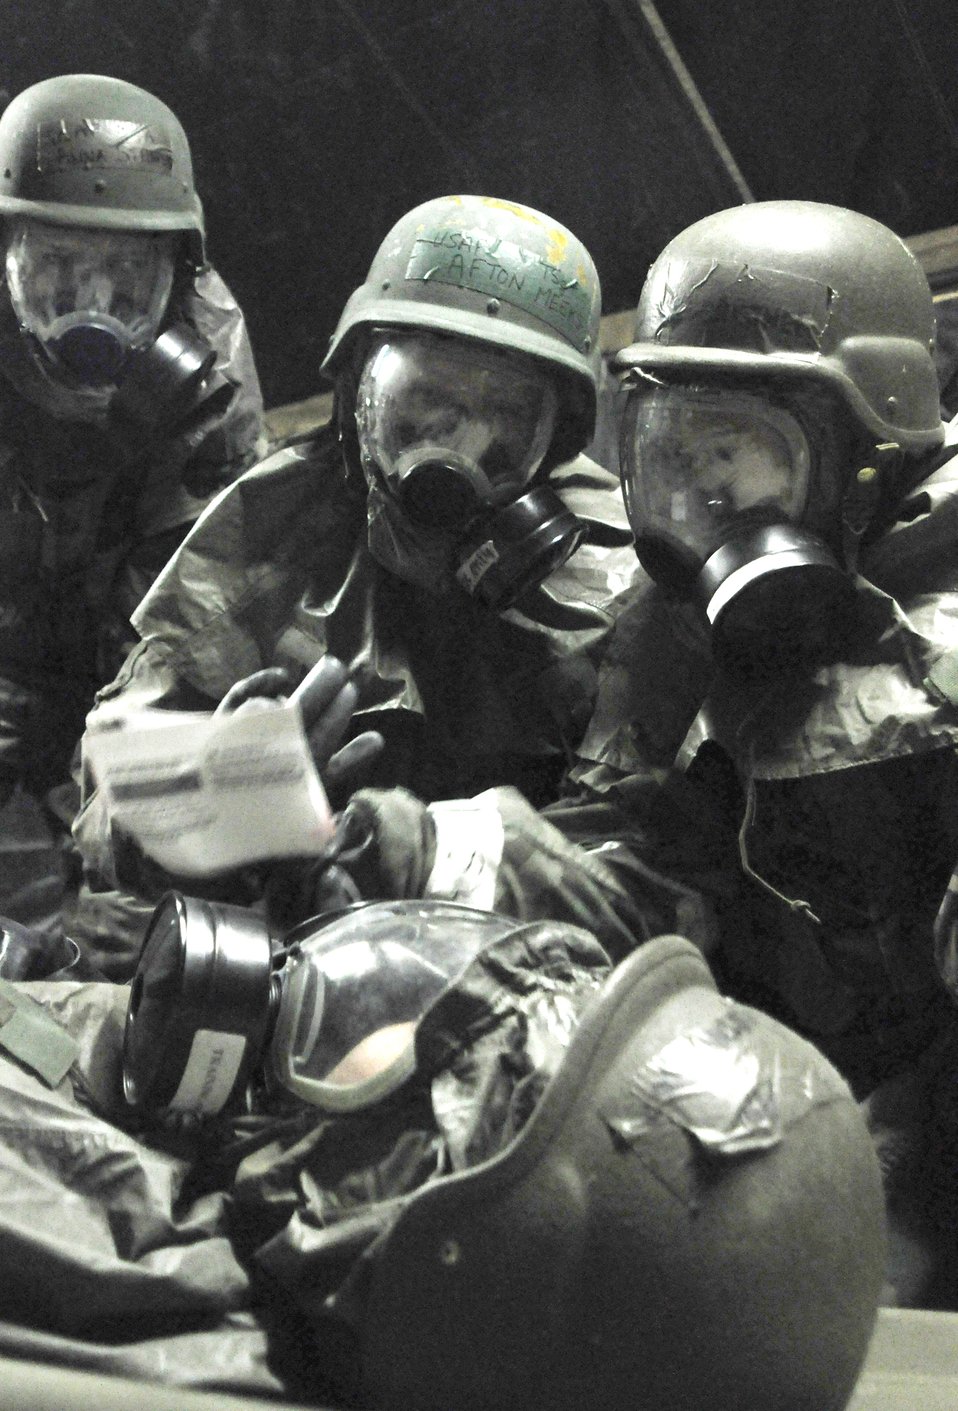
Where does it hurt?

Staff Sgt. Crystal Thompson, Tech. Sgt. Afton Meeks, and Senior Airman Anna Steinfeldt of the 419th Medical Squadron look over the